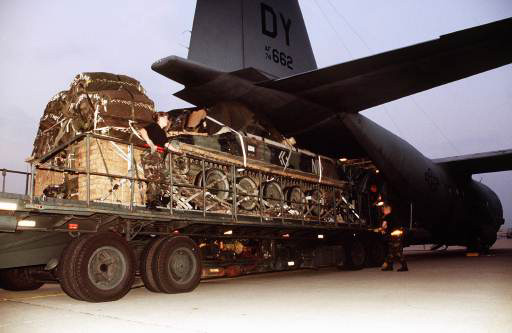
Air Force plans to deactivate Willow Grove wing

Cargo is loaded onto a C-130 Hercules, with similiar aircraft flown by Airmen assigned to the 913th Airlift Wing at Naval Air Station Joint Reserve Base in Willow Grove, Pa. Air Force Reserve Command officials briefed congressional leaders Jan. 3 on plans to deactivate the command's 913th AW.